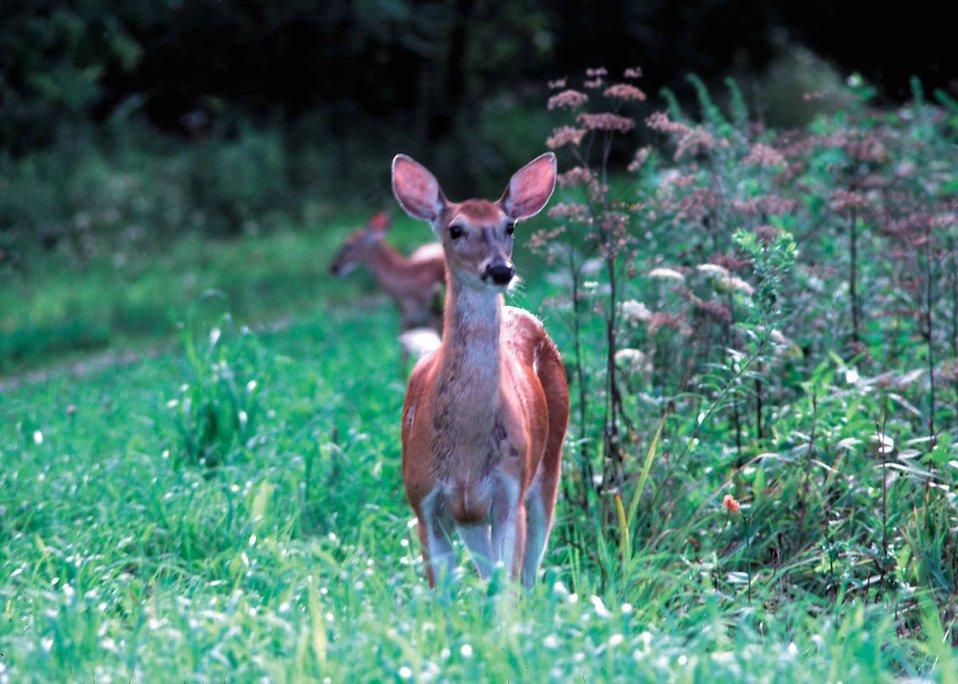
Whitetail deer.